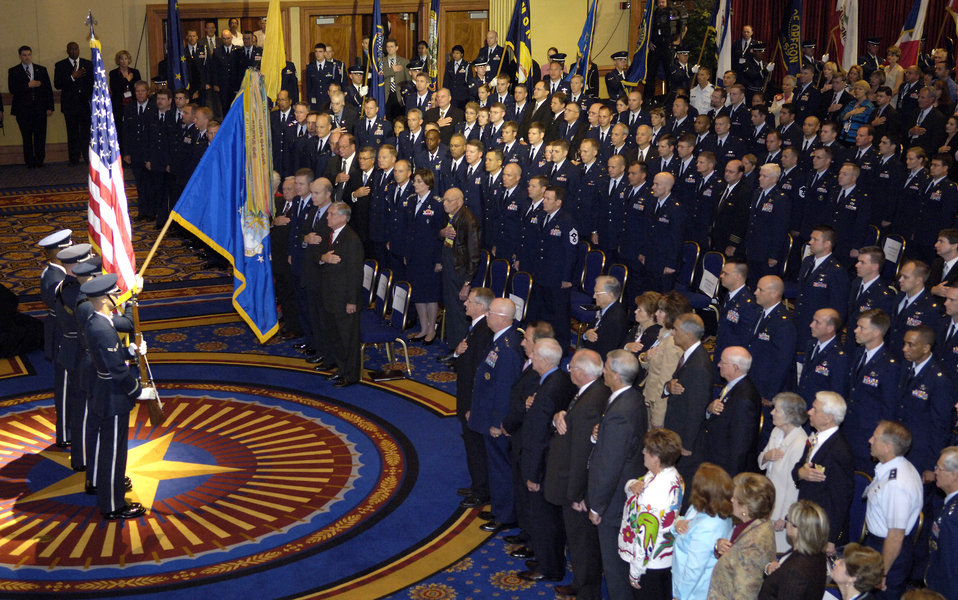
Air & Space Conference 2005

WASHINGTON -- Members of the U.S. Air Force Honor Guard render honors to the colors during the opening ceremonies of the 2005 Air and Space Conference and Technology Exposition here Sept. 12.